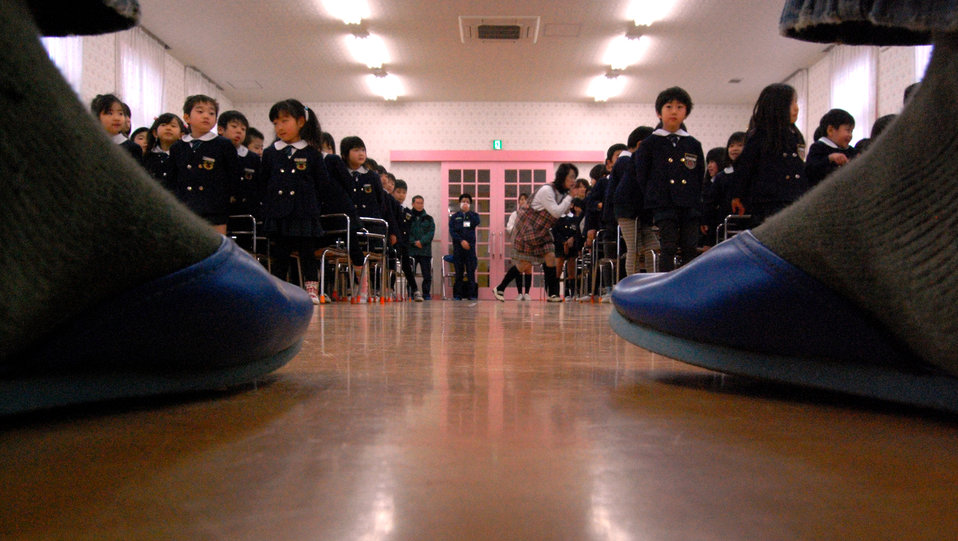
Kadena Airmen visit school children during training

About 100 Kindergartners from Runbini Kindergarten near Hyakuri Air Base, Japan, greeted a dozen Airmen from Kadena Air Base, Japan, during a visit Feb. 1, 2010. The visit was part of a community outreach event during the Airmen's aviation training relocation at the Japanese air base.